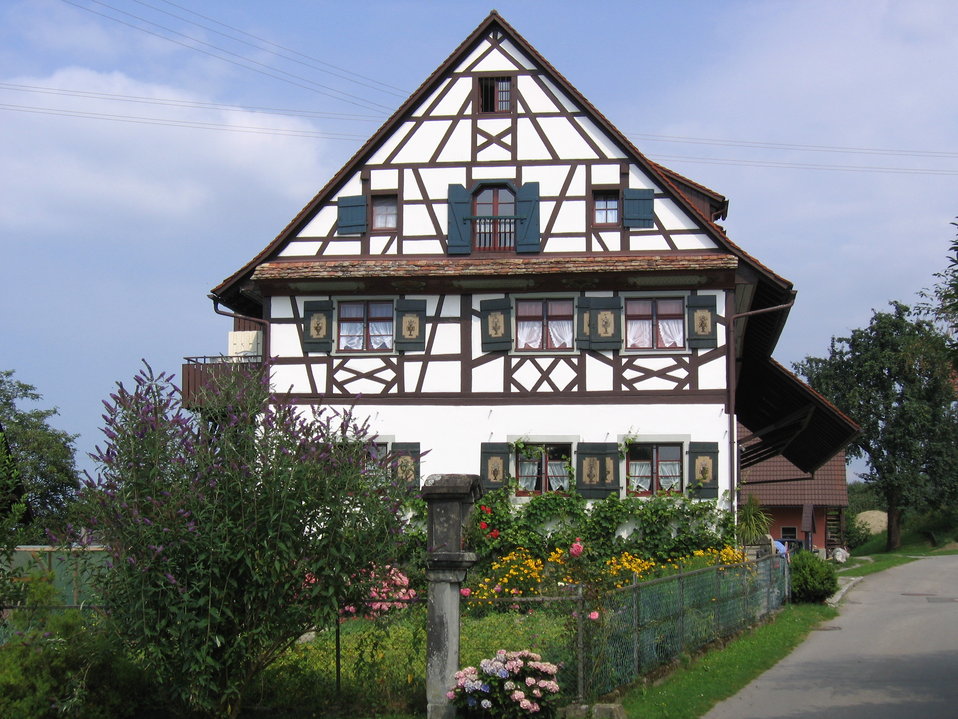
Germany - Baden-Württemberg - Bodenseekreis - Kressbronn am Bodensee - Retterschen, Backhausweg 15: timber framing Deutsch: Deutschland - Baden-Württemberg - Bodenseekreis - Kressbronn am Bodensee - Retterschen, Backhausweg 15: Fachwerkhaus